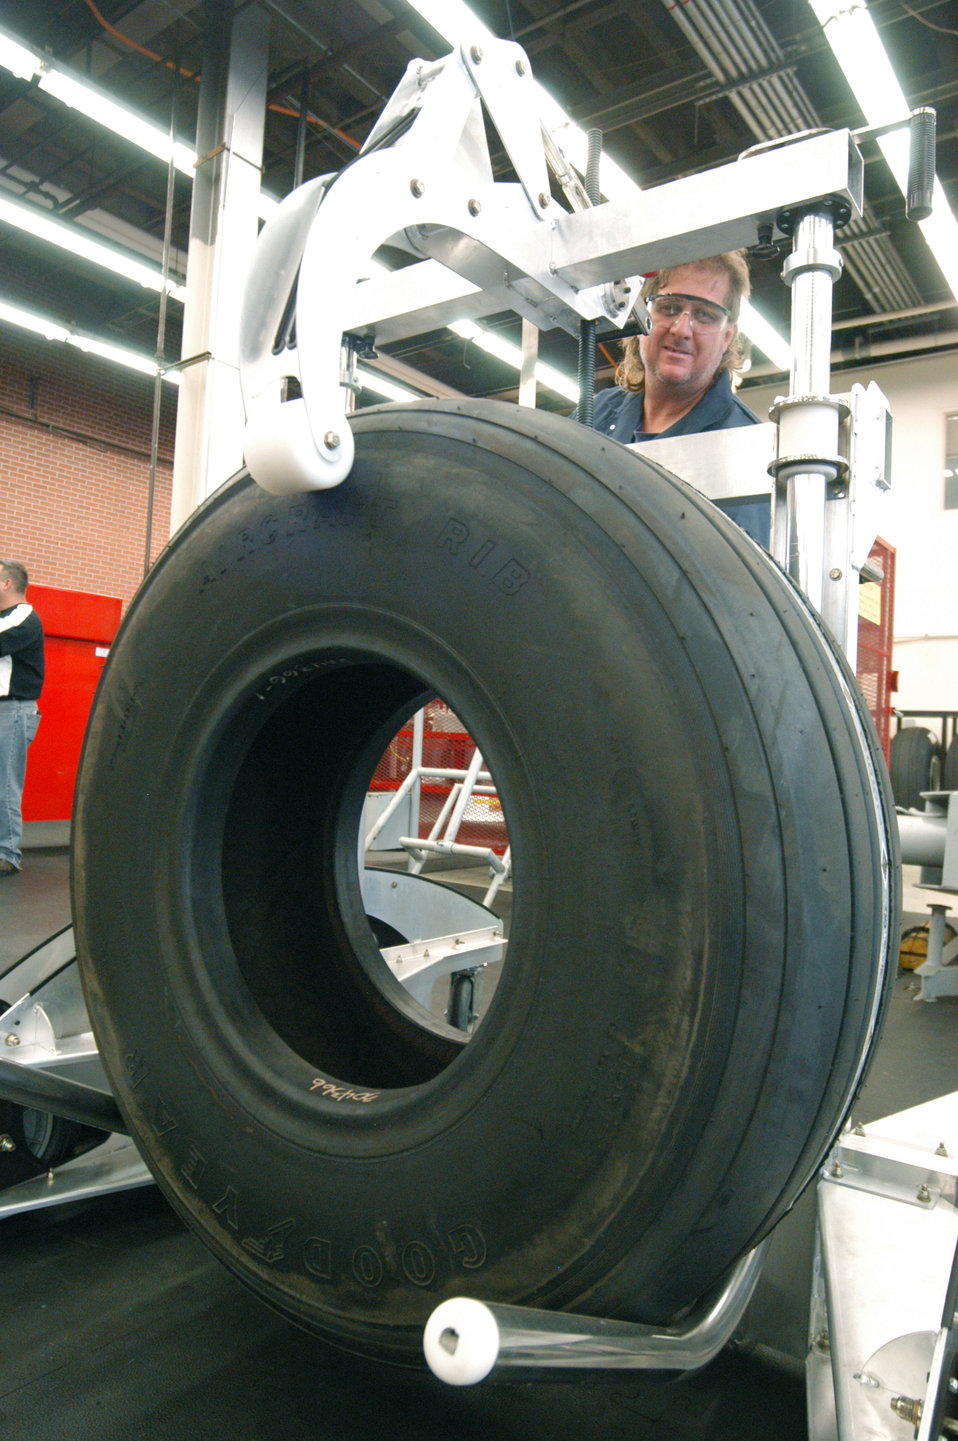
Ergonomic robot vehicle helps workers inspect tires safely

ROBINS AIR FORCE BASE, Ga. -- Darren Rew uses the Ergo Control 300 Robot, a wheel and tire handling vehicle, to move a C-5 Galaxy tire to the work area. Workers used to have to lift the 250-pound tires by hand. Mr. Rew is an aircraft mechanic in the maintenance directorate's C-5 wheel and tire shop here.